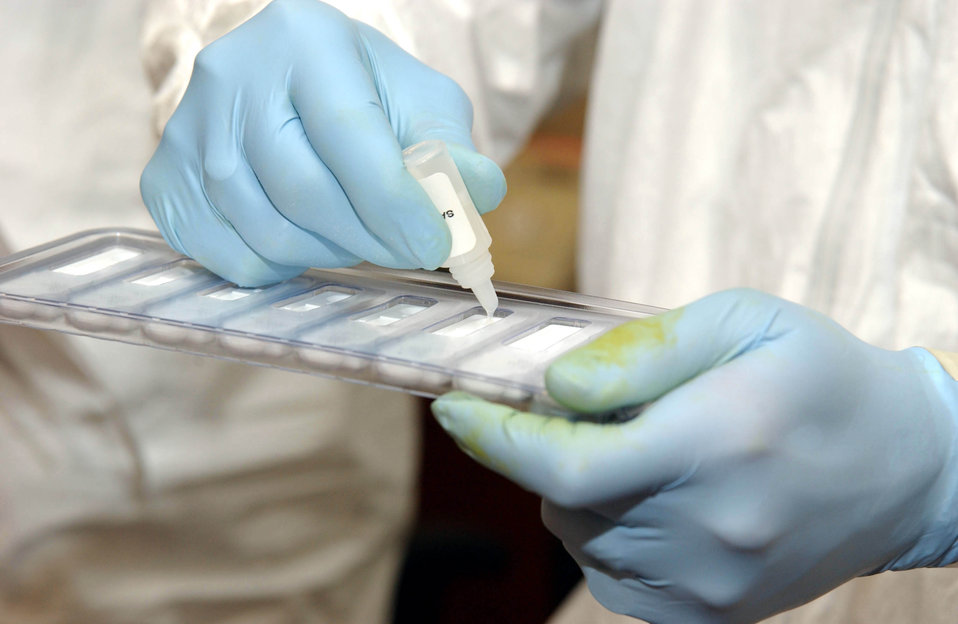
This is only a test

MACDILL AIR FORCE BASE, Fla. -- Airman 1st Class Jason Baker tests white powder for hazardous agents during an exercise here March 11. The exercise was held to prepare the base for any possible contingency during an upcoming air show. Airman Baker is assigned to the 6th Aeromedical Squadron.